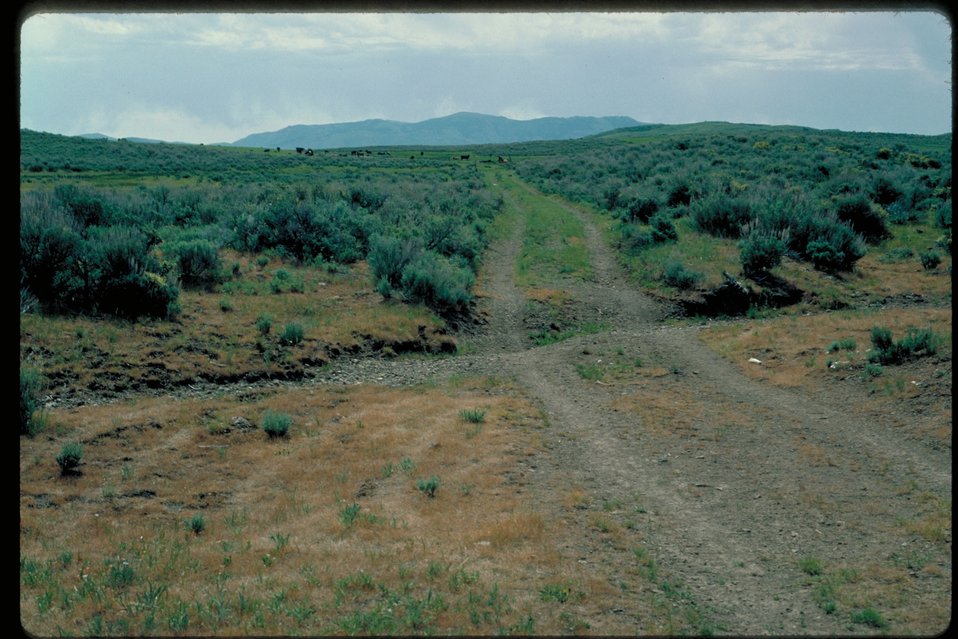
Goodales Cutoff McQuire Springs Oregon Trail Lower Snake River District